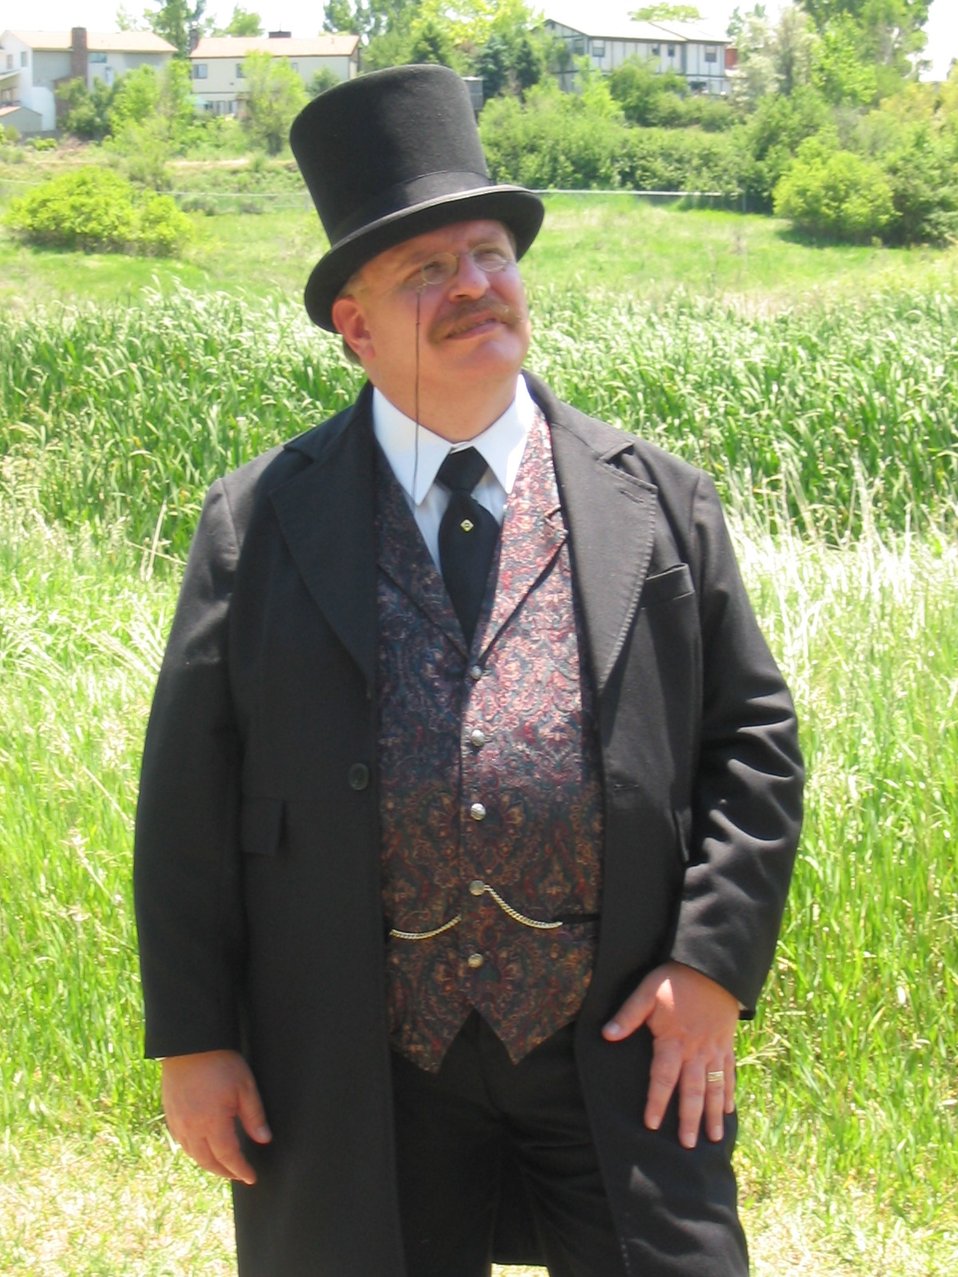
TR Impersonator